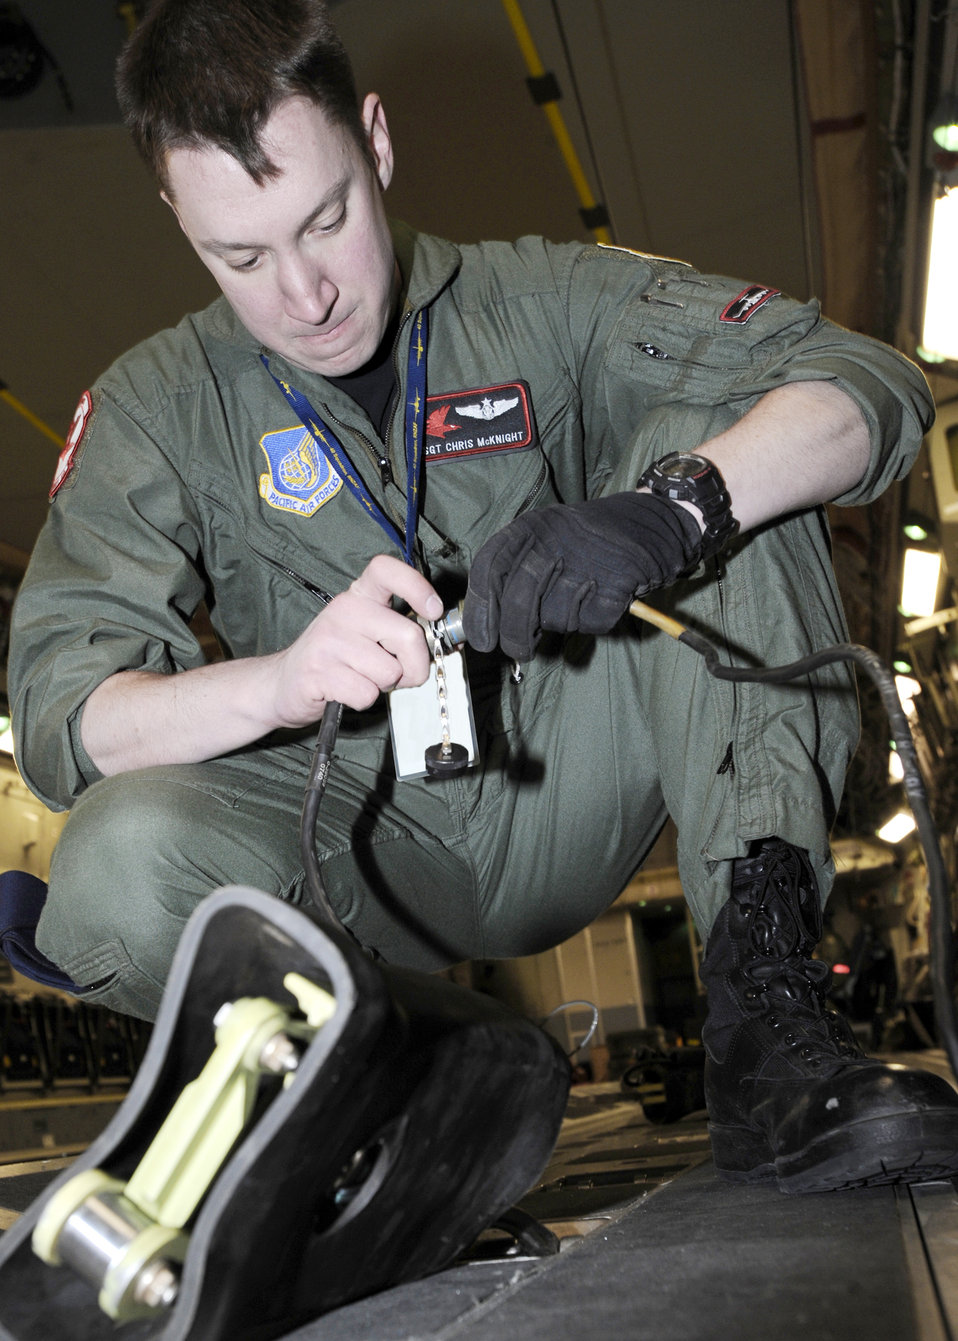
Elmendorf Airmen complete airdrop using 3-D weather technology

Staff Sgt. Chris McKnight prepares an electronic tie down before loading a crate onto a C-17 Globemaster III March 19, 2010, Elmendorf Air Force Base, Alaska. Sergeant McKnight and his crew from the 517th Airlift Squadron participated in a combat simulation improved container delivery drop over Tin City, Alaska.